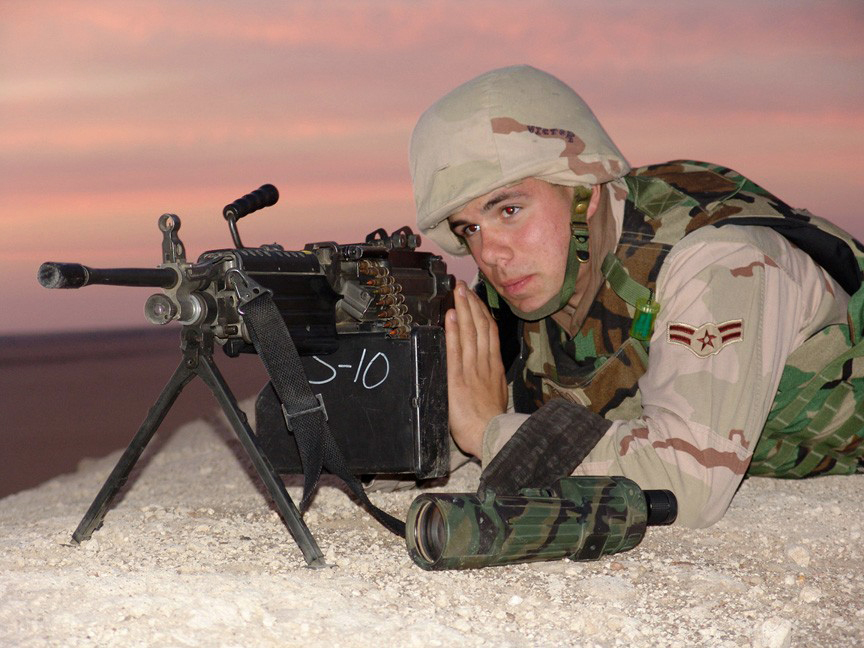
Vipers on the prowl

SOUTHWEST ASIA -- Airman 1st Class Brian Corso, 386th Expeditionary Security Forces Squadron Viper Flight, observes the surrounding area to ensure there are no threats to aircraft landing and taking off here. The 386th ESFS is responsible for defending the 386th Air Expeditionary Wing's base from attack.